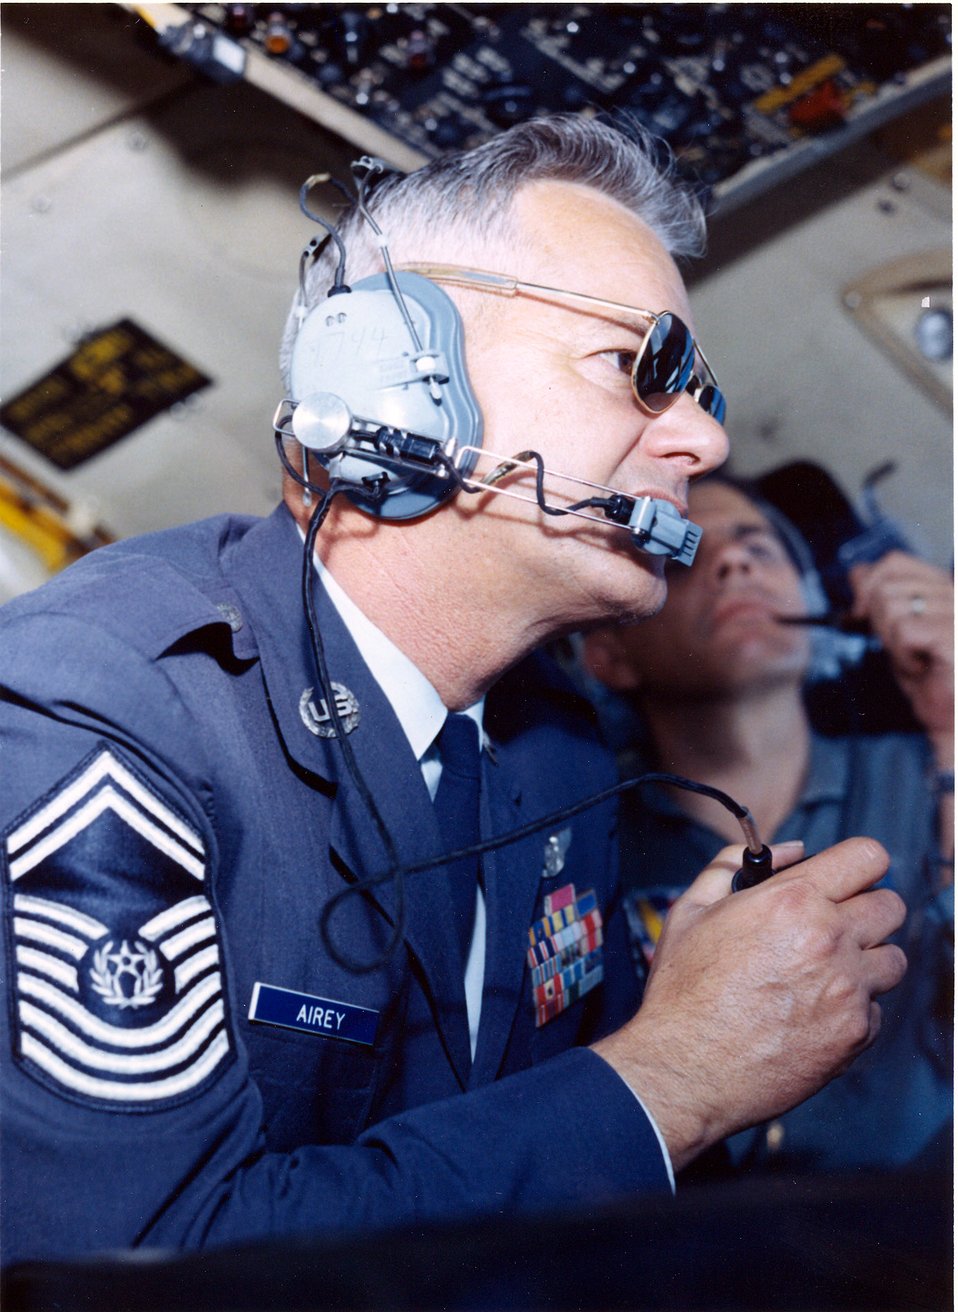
Enlisted perspective remembers the 'first'

Chief Master Sgt. Paul Airey was selected as the first chief master sergeant of the Air Force on April 3, 1967. During his tenure he visited many bases and talked with many Airmen about improving conditions for the enlisted force.